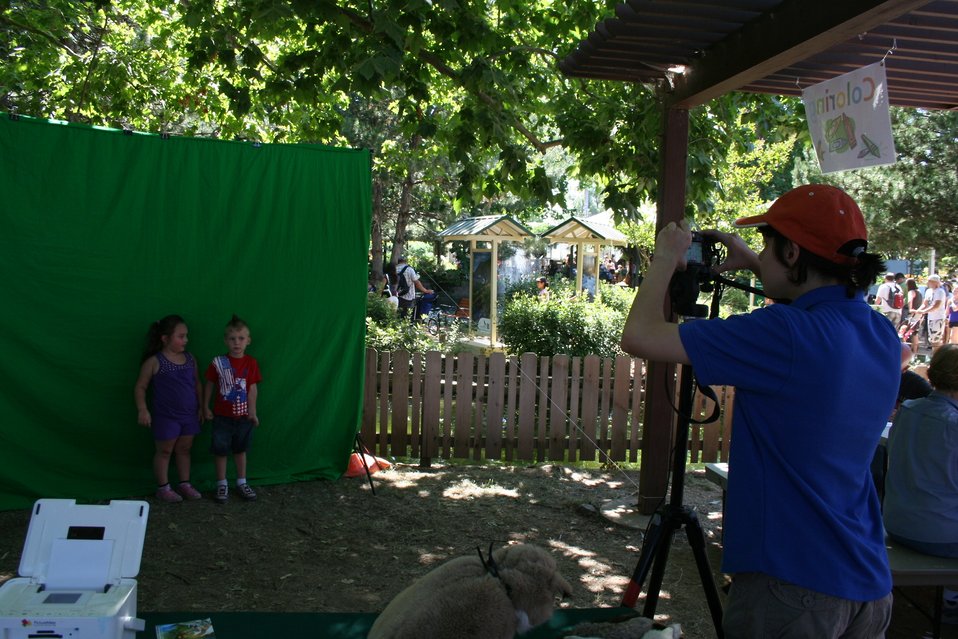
Green screen technology at the DOI booth

For the first time DOI agencies [US Fish & Wildlife Service, Bureau of Reclamation and Bureau of Land Management] joined together to host an America's Great Outdoors Booth at the California State Fair in Sacramento, Calif., July 14 - 31.

The booth included informational panels and displays as well as a children's activity area. Activities: wildlife masks, temporary tattoos, water-cycle bracelets, fish prints, touch boxes, scat bingo, a green-screen, coloring and bird bingo. Five days a week live raptors, snakes and bats were brought in.

About 50,000 children visitied the booth during the 18-day fair.